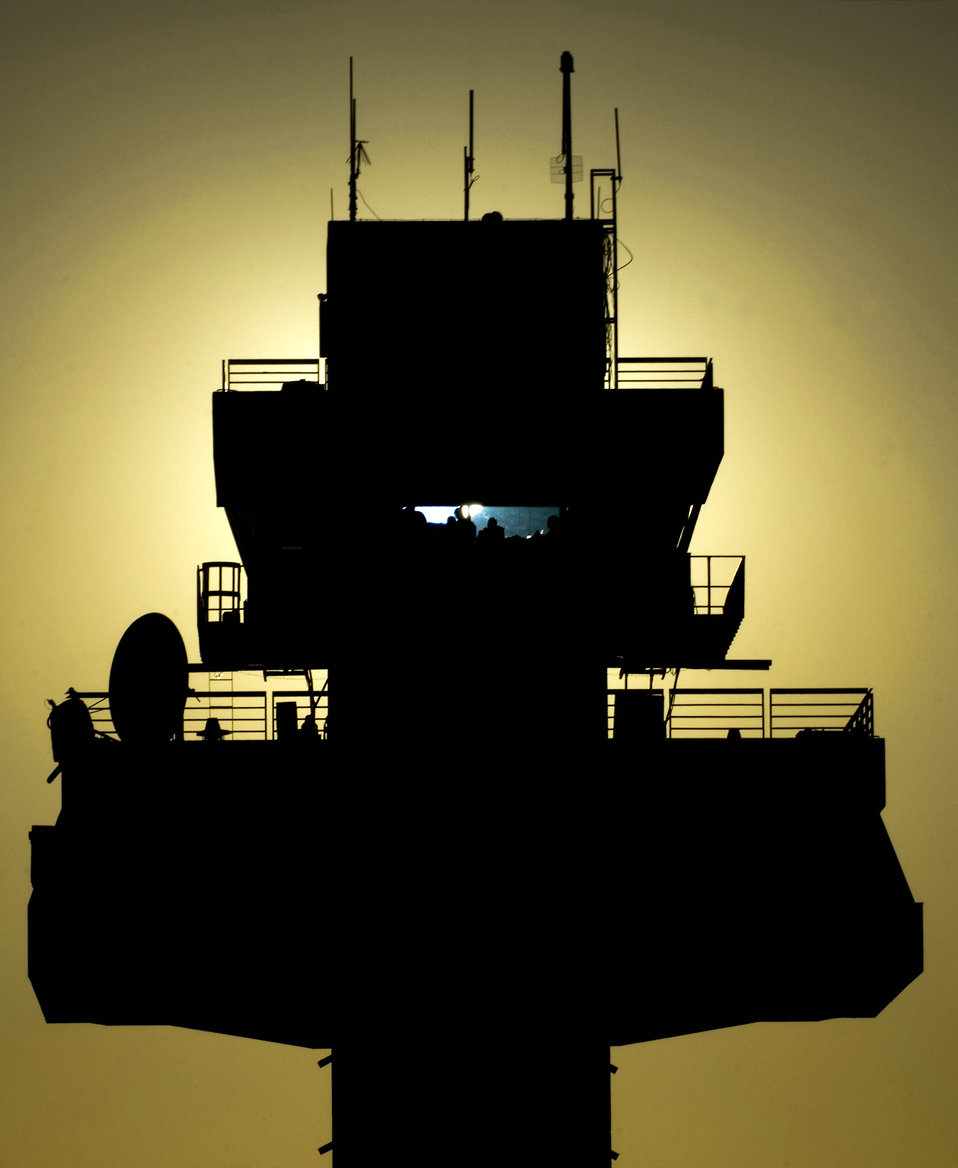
When the sun goes down, Balad heats up

The setting sun silhouettes the air traffic control tower at Joint Base Balad, Iraq, Dec. 18. The 332nd Expeditionary Operations Support Squadron controls aircraft from this tower. The 332nd Air Expeditionary Wing at Balad is the most forward-deployed Air Force wing participating in Operation Iraqi Freedom, and its heritage is tied to the famous 332nd Fighter Group